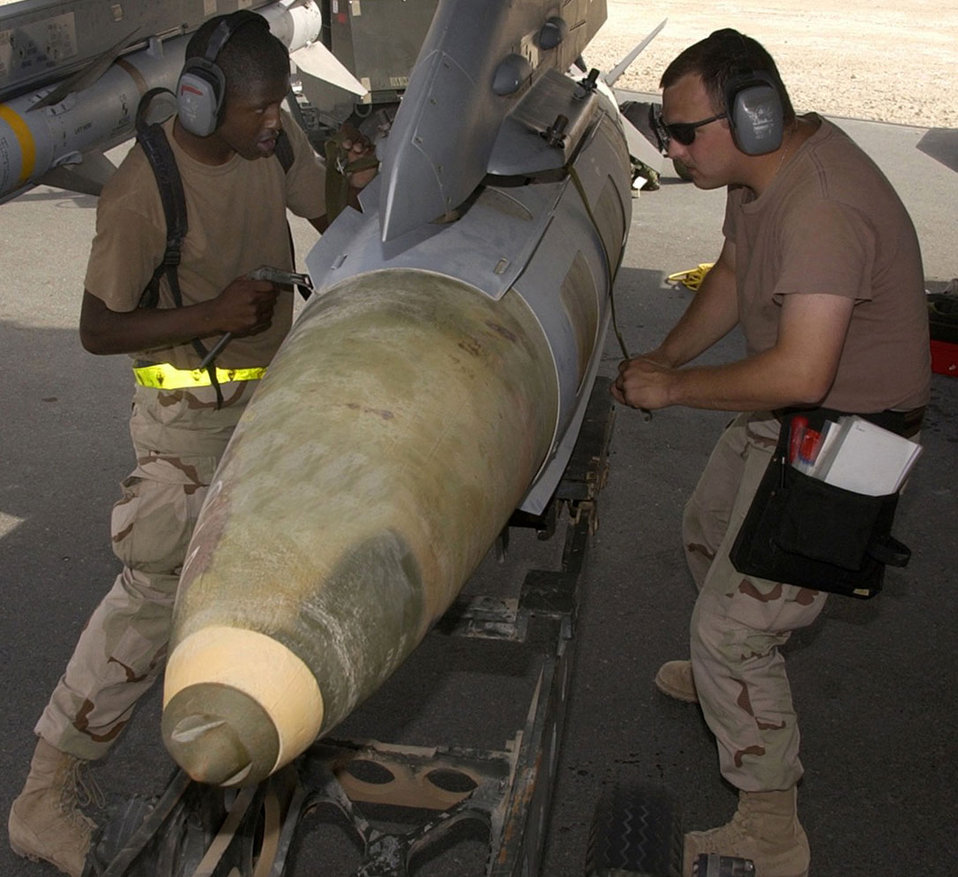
GBU-31 load

OPERATION IRAQI FREEDOM -- A weapons load crew from the 22nd Expeditionary Fighter Squadron loads a GBU-31 precision-guided bomb on an F-16 Fighting Falcon on March 24 at a forward-deployed Operation Iraqi Freedom air base.